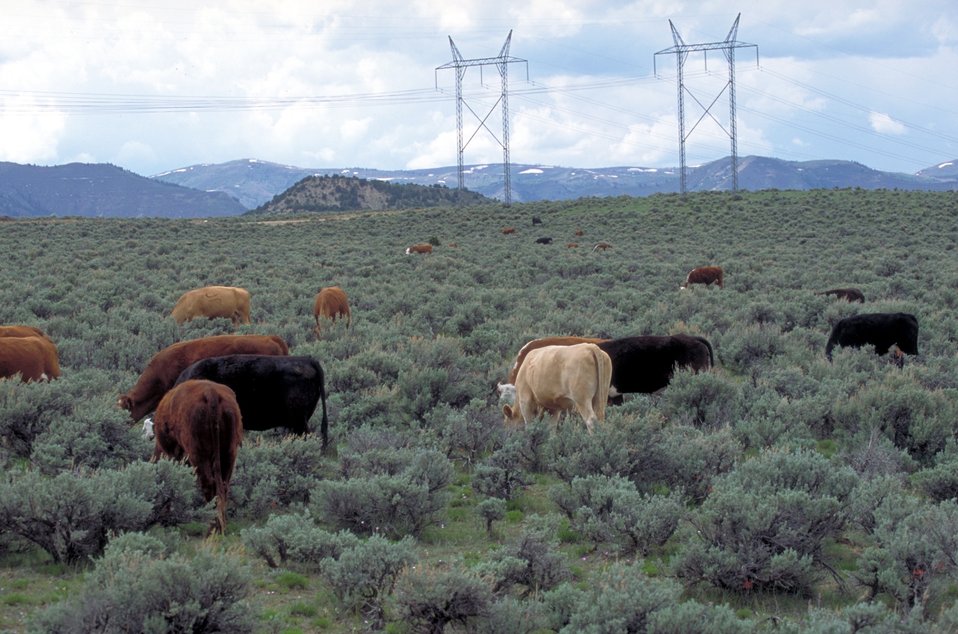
Livestock grazing on BLM lands near Price, Utah.